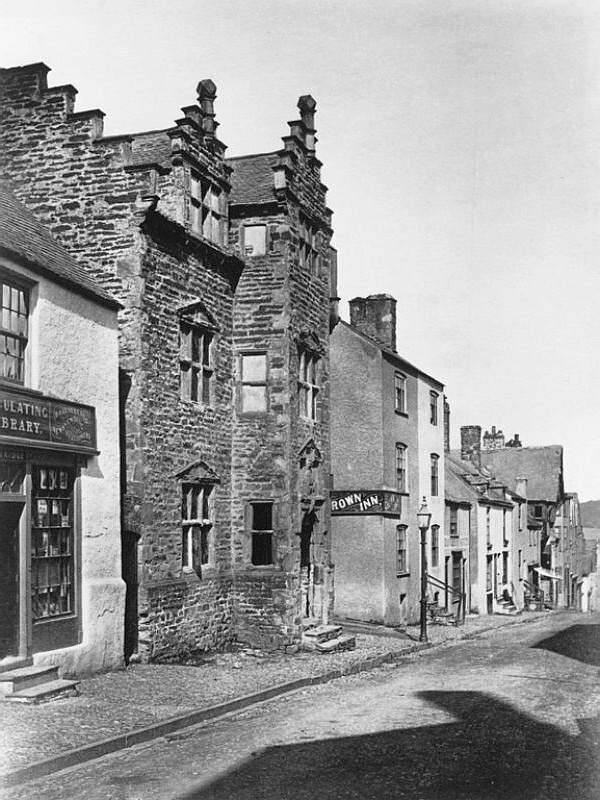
Plas Mawr Conwy Wales black and white photograph